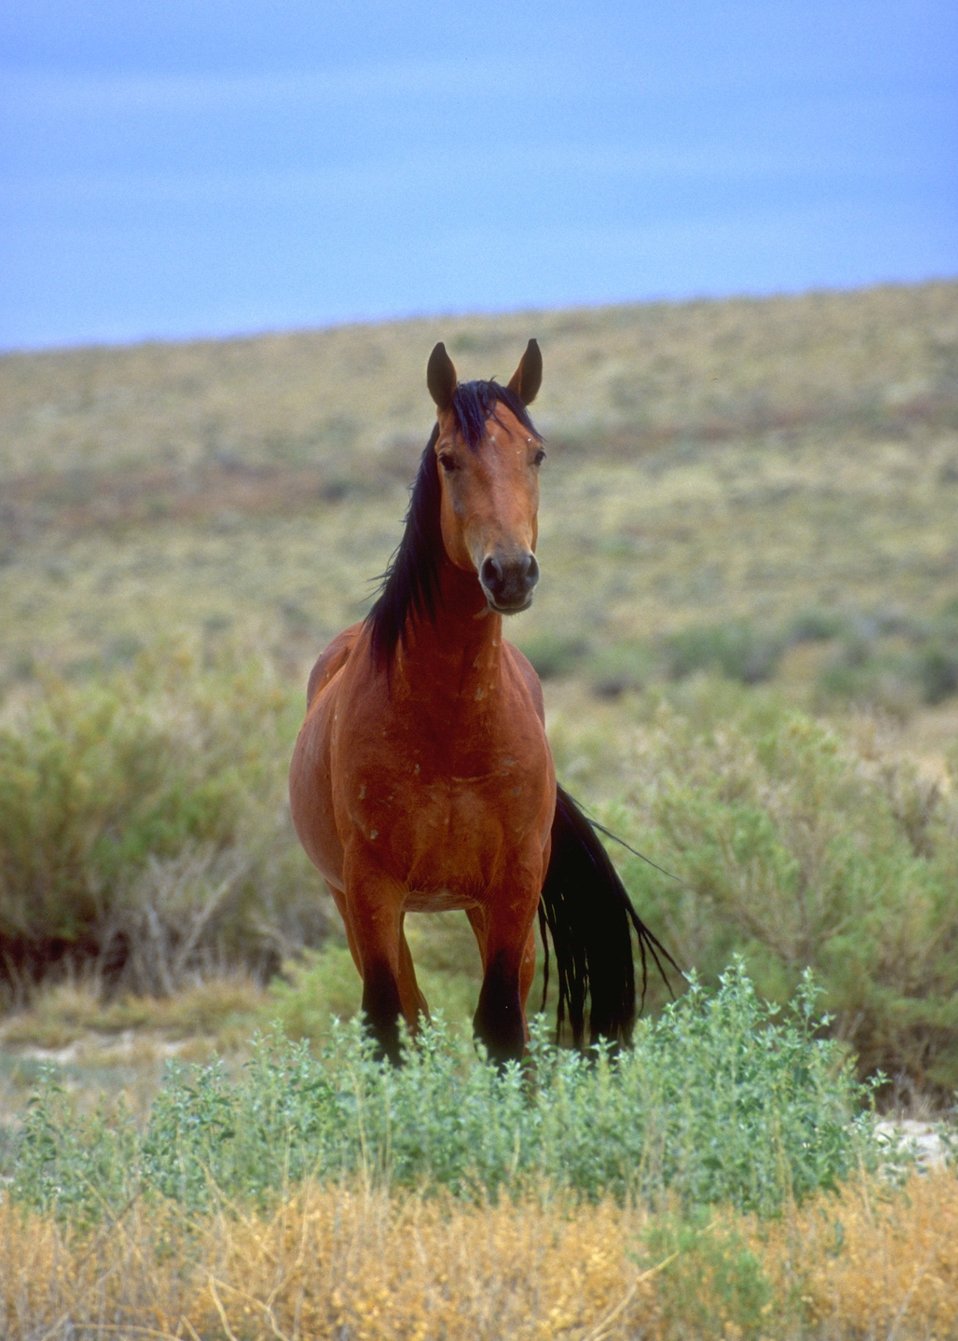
Wild horses, Rock Springs Field Office.